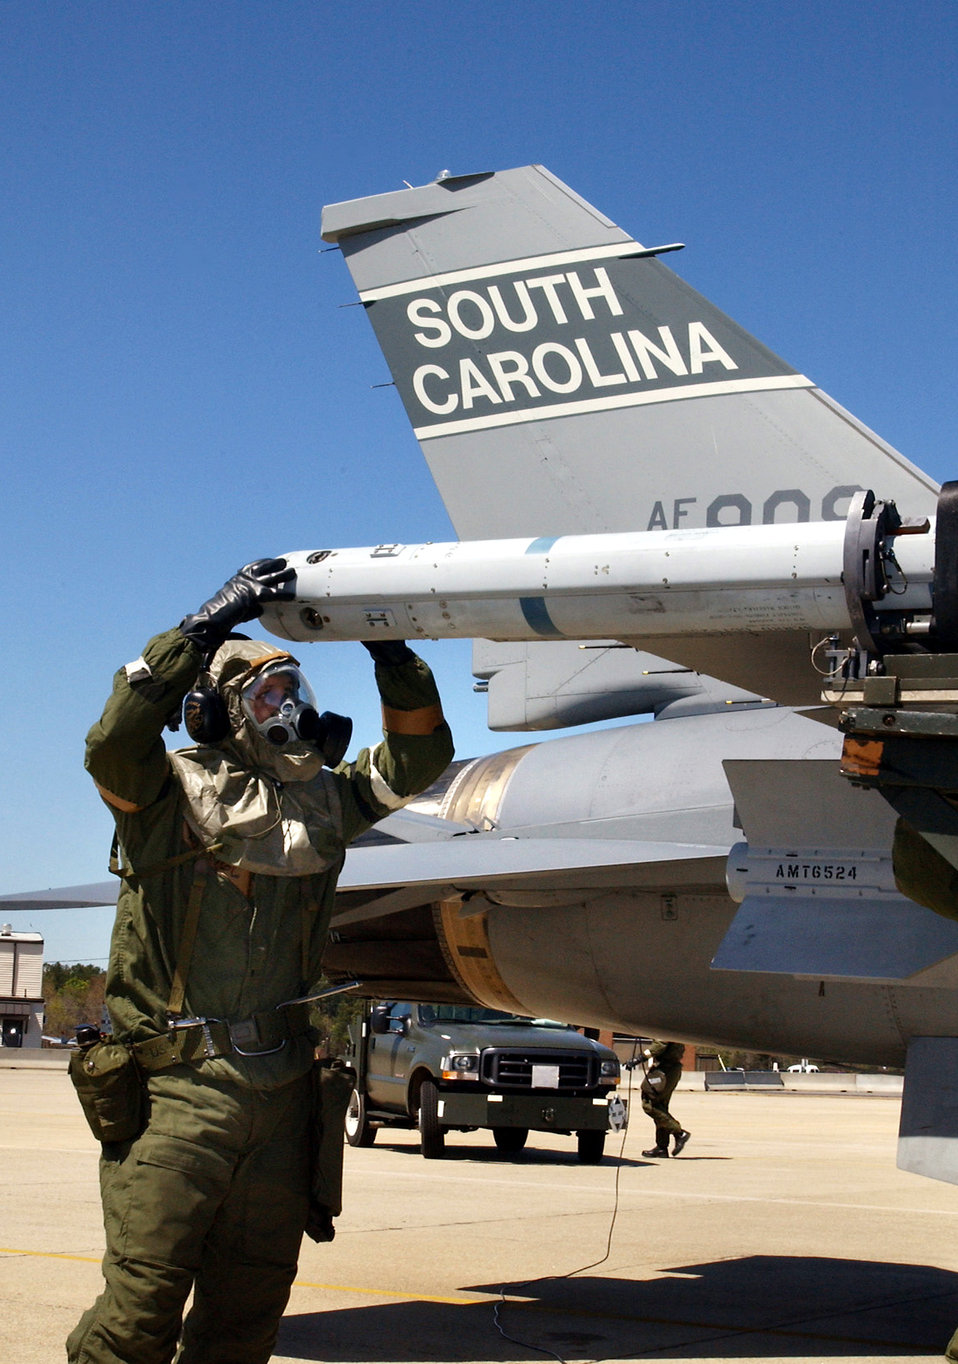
Getting ready to launch

MCENTIRE AIR NATIONAL GUARD STATION, S.C. -- A crew chief prepares an F-16 Fighting Falcon for a exercise mission here April 3. The crew chief is a member of the South Carolina Air National Guard's 169th Fighter Wing.